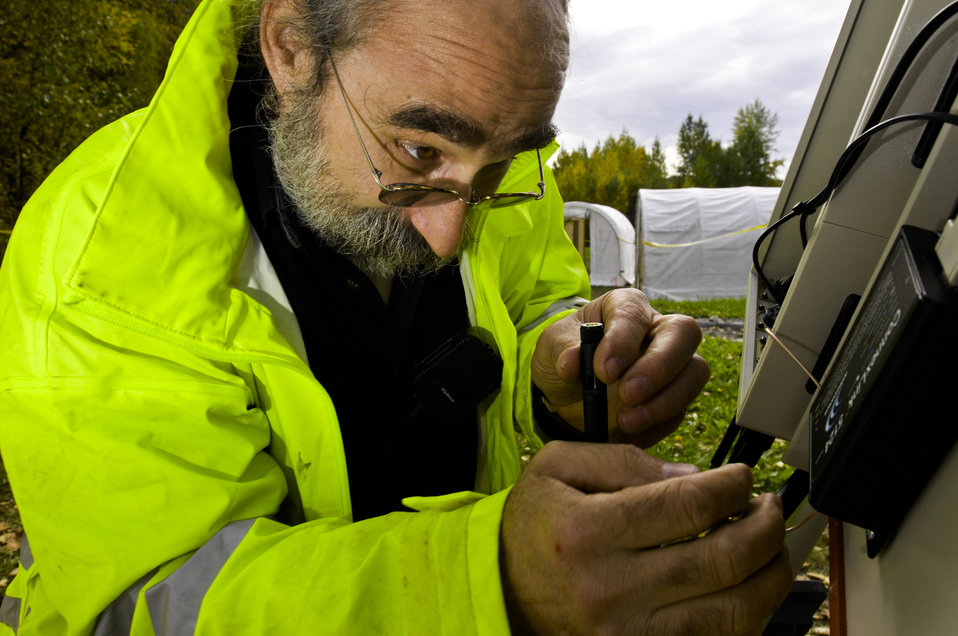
Fall spill drill

ELMENDORF AIR FORCE BASE, Alaska ? John Rose, 611th Civil Engineer Squadron, fixes a weather vane Sept. 17. The weather vane helped 611th CES members know which direction and how fast the wind was blowing, so that they could predict where the hazardous waste would spread on the water during their annual Fall Spill Drill held Sept. 14-18. The 611th CES is required to do hands-on training twice a year, one which is held in the winter and practiced on thick ice and the second held in the fall before the ice freezes over.